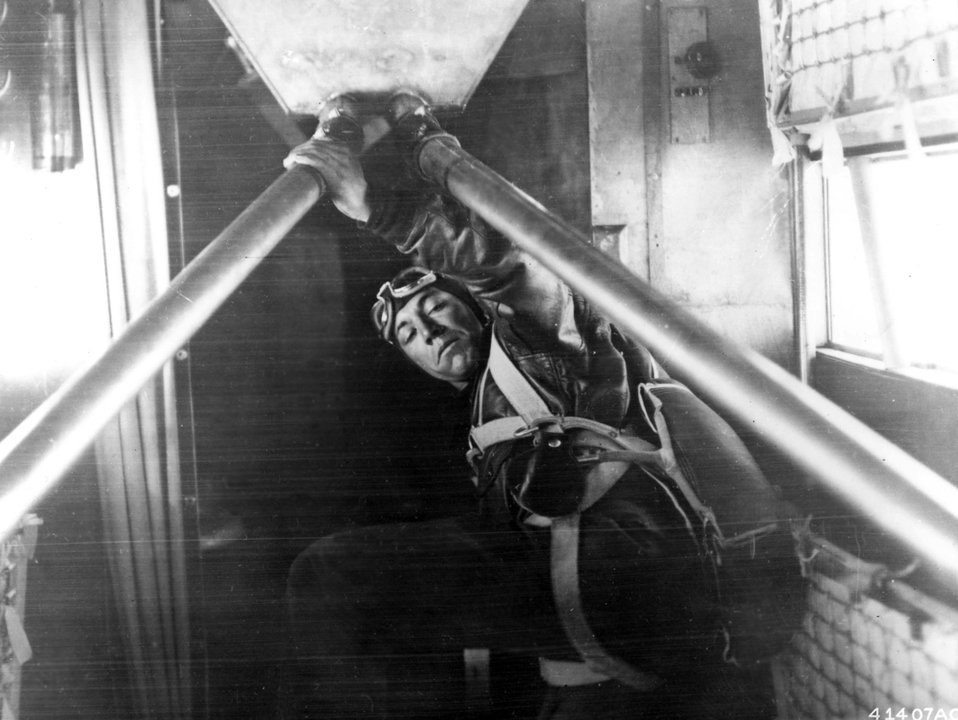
Flight of the Question Mark

Lt. Elwood